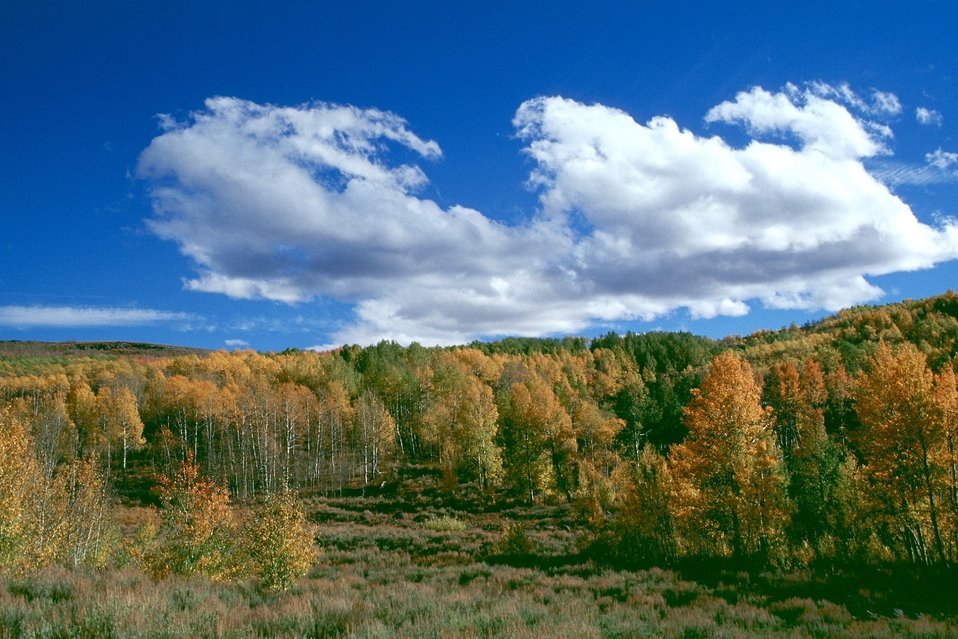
Aspens at Fish Creek, Steen's Mountain.